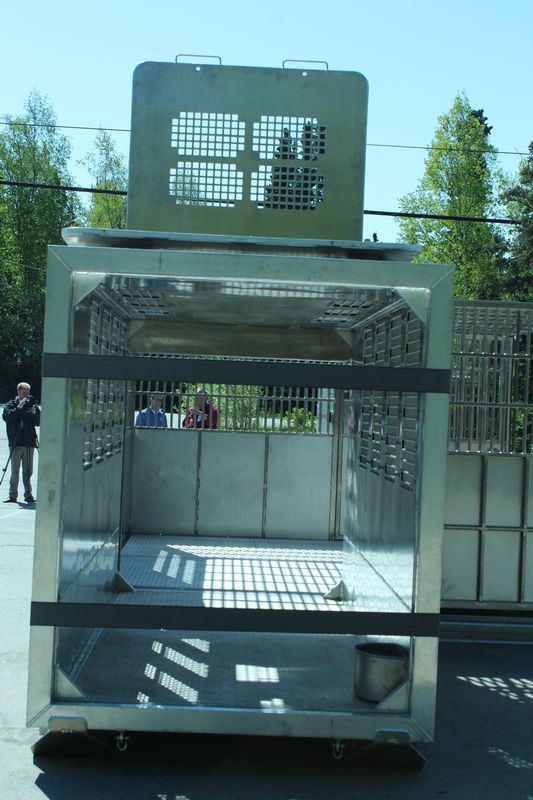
Press Conference on the polar bear holding module. USFWS/Rose Primmer